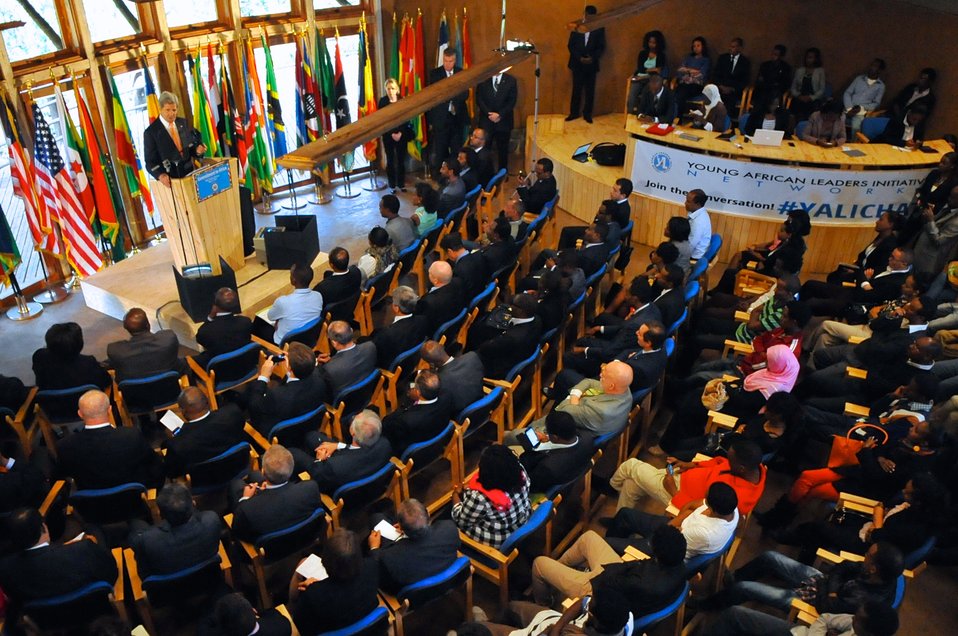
Audience Listens As Secretary Kerry Delivers Speech About Africa Policy in Ethiopia

The audience listens as U.S. Secretary of State John Kerry delivers a speech about Africa policy in a botanical garden outside Addis Ababa, Ethiopia, on May 3, 2014.